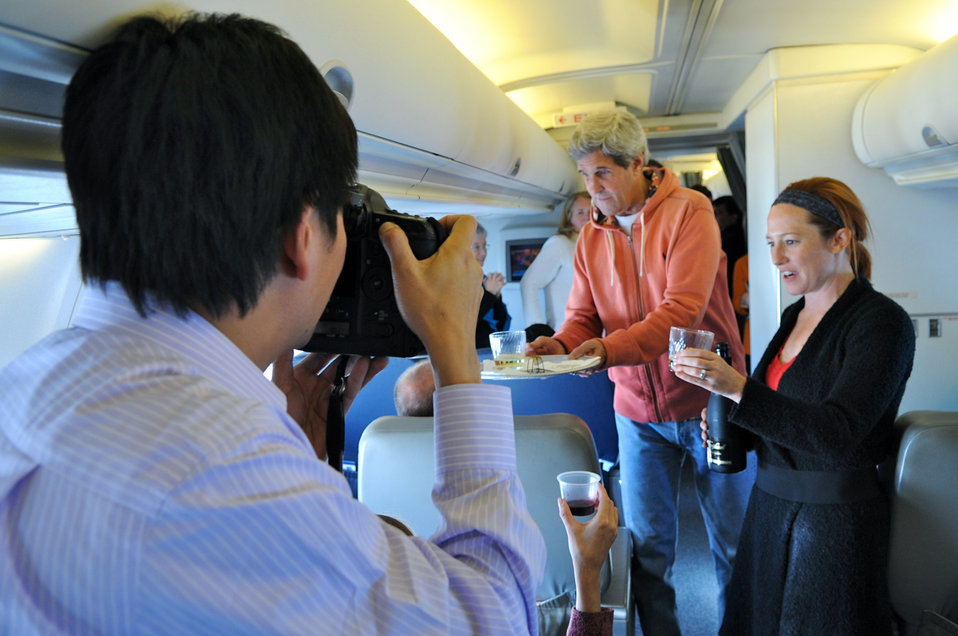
Secretary Kerry Celebrates First Briefing by Spokesperson Psaki En Route to Stockholm, Sweden

U.S. Secretary of State John Kerry uncorks a bottle of champagne en route from Andrews Air Force Base to Stockholm, Sweden as he celebrates the first press briefing at the U.S. Department of State Department by his new Spokesperson, Jen Psaki, on May 13, 2013.